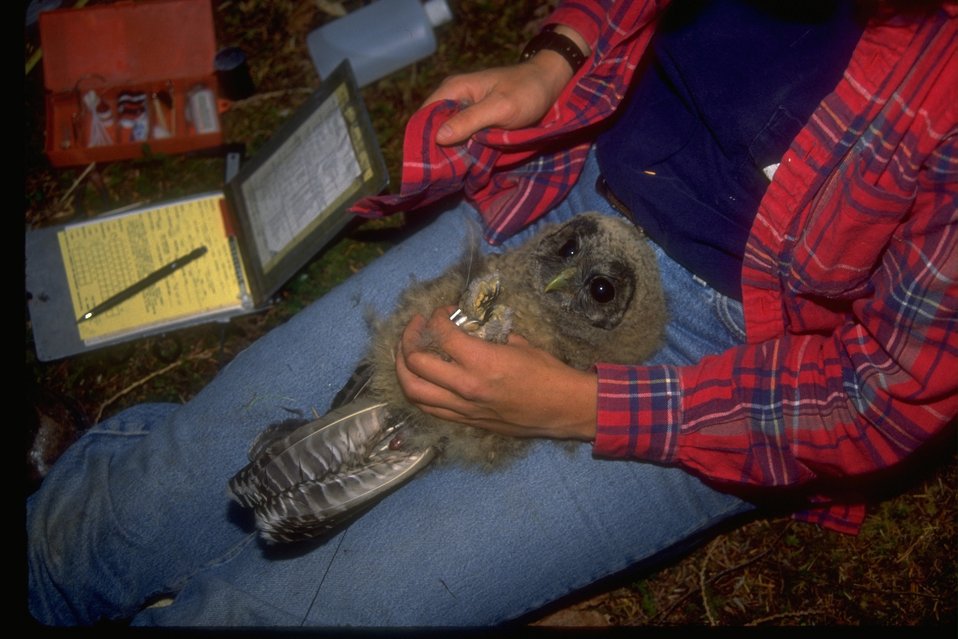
Northern Spotted Owl being looked at by a worker.